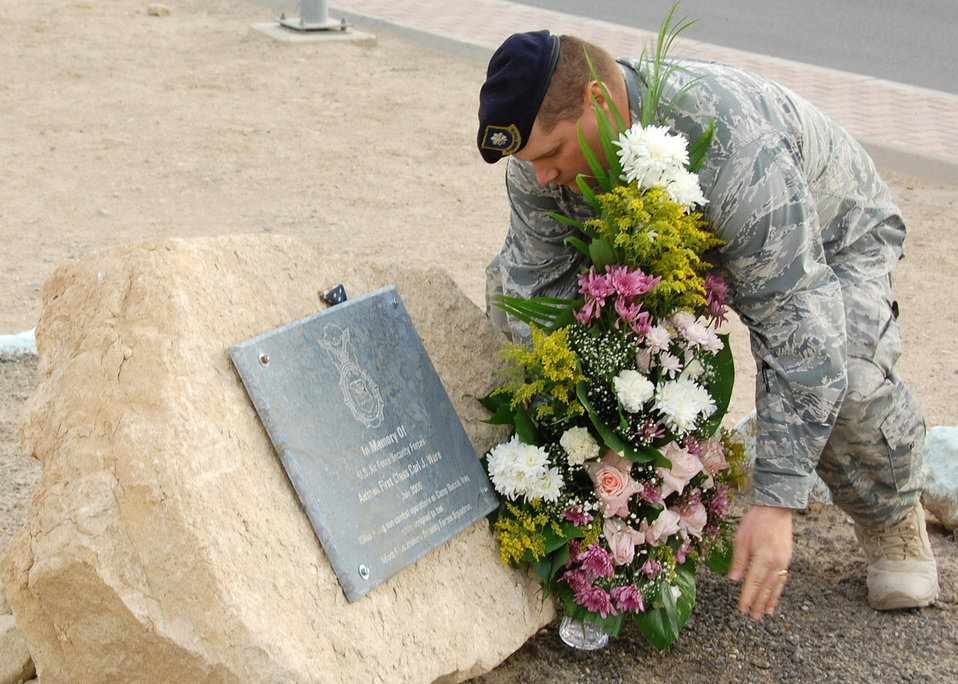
In memoriam

During National Police Week, Lt. Col. David Young, 386th Expeditionary Security Forces Squadron commander, places flowers at the memorial of Airman 1st Class Carl J. Ware at an air base in Southwest Asia. Airman Ware was a security force member killed near Camp Bucca, Iraq, in 2006.